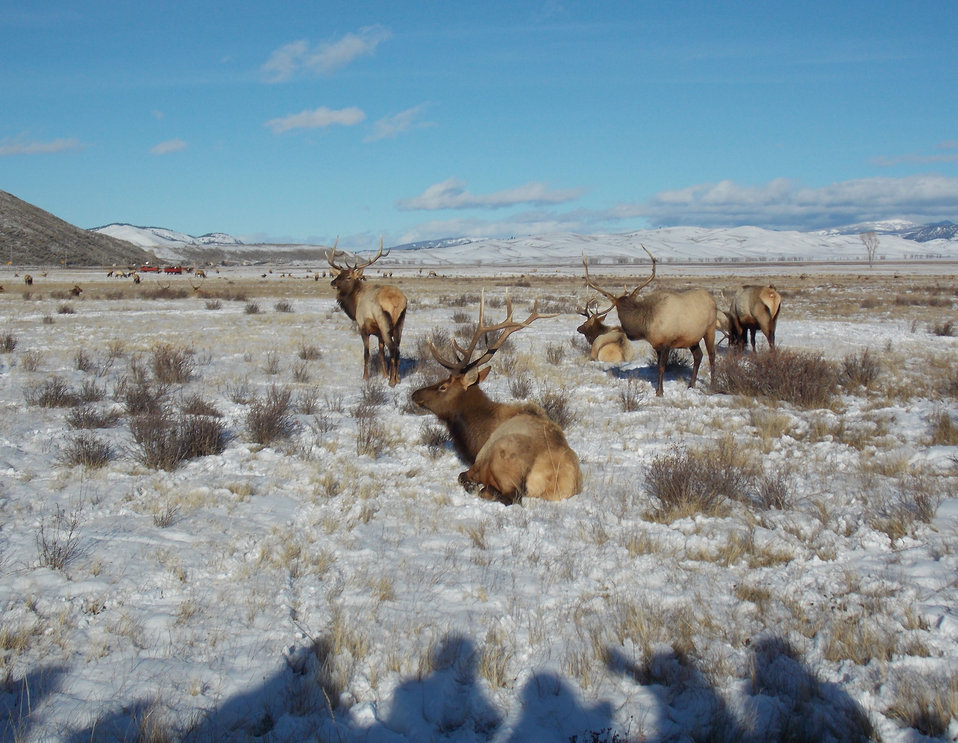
Sleigh Ride Shadows

Passengers cast shadows from their sleigh ride as they view nearby elk.

Credit: USFWS / Jessie Stirling, National Elk Refuge winter naturalist